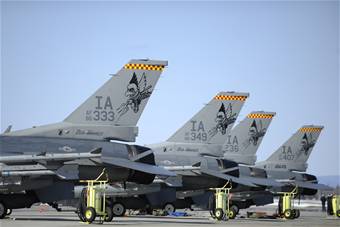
Maintainers make it happen during Red Flag-Alaska

Four F-16 Fighting Falcons from the Iowa Air National Guard's 132nd Fighter Wing in Des Moines sit on the tarmac at Eielson Air Force Base, Alaska, April 16 in preparation for the next Red Flag-Alaska 09-2 mission. Red Flag-Alaska is a Pacific Air Forces-directed field training exercise for U.S. and coalition forces flown who fly under simulated air-combat conditions.